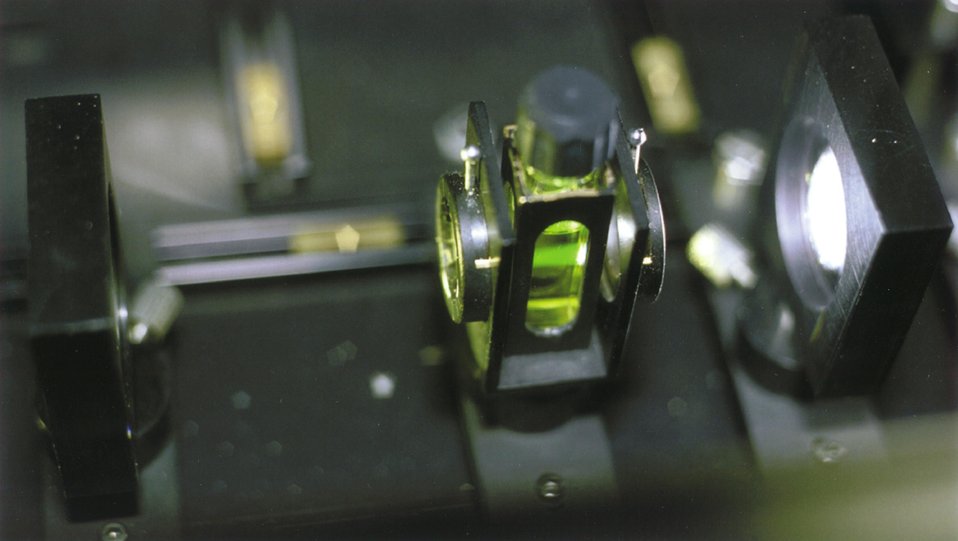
HYDROCARBON PHOTO OXIDATION EXPERIMENT AT AMES LABORATORY.

THE LIGHT FROM AN ANALYZING BEAM INDUCES GREEN LUMINESCENCE OF THE URANYL IONS DURING A HYDROCARBON PHOTO OXIDATION EXPERIMENT AT AMES LABORATORY.